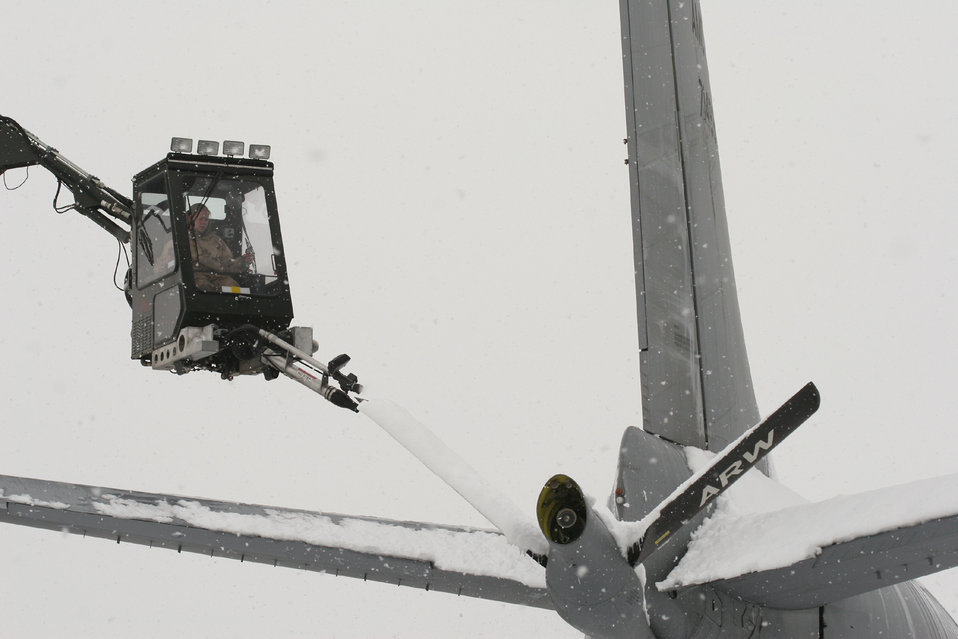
Oh snowy day

MANAS AIR BASE, Kyrgyzstan -- Senior Airman Dana Richardson de-ices a KC-135 Stratotanker. The base received five inches of snow in two days. Airmen here were not fazed; they launched more than 22 sorties, handling more than 1,500 passengers. Airman Richardson is assigned to the 376th Expeditionary Logistics Readiness Squadron.